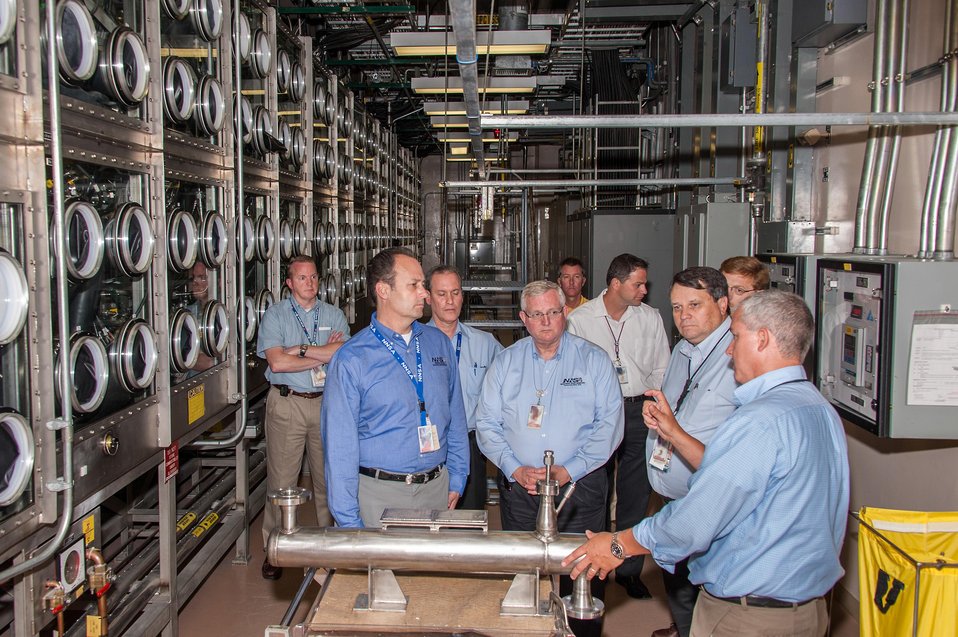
MICHAEL K. LEMPKE, NNSA ASSOCIATE PRINCIPAL DEPUTY ADMINISTRATOR, DURING HIS TOUR OF THE SAVANNAH RIVER SITE'S TRITIUM FACILITIES, H-CANYON AND SAVANNAH RIVER NATIONAL LABORATORY FACILITIES, MAY 20-22, 2013.